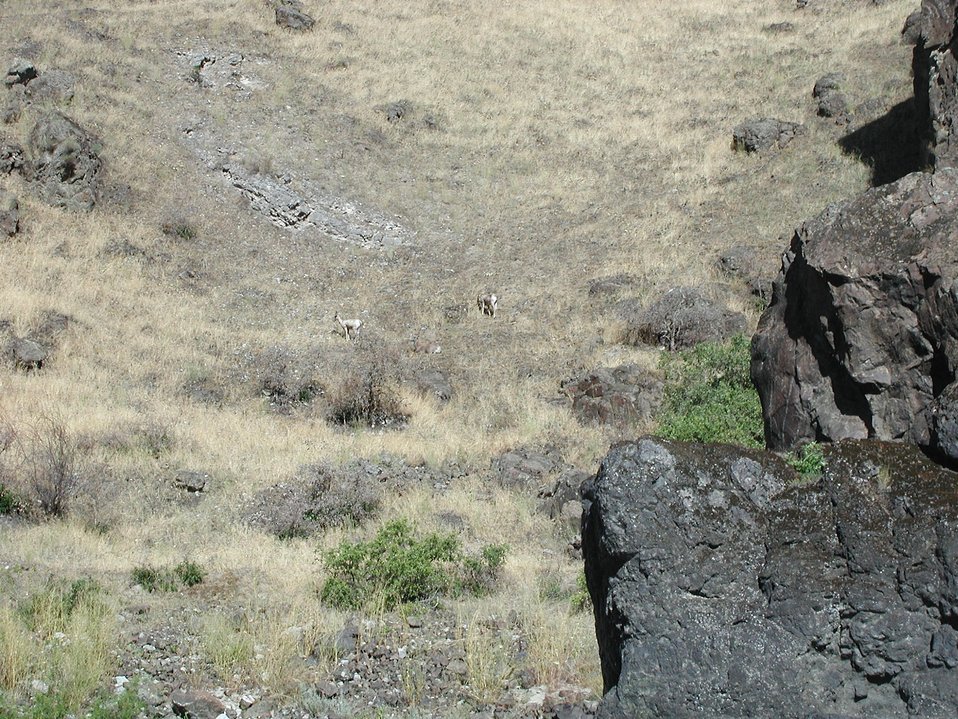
Rocky Mountain Bighorn Sheep Lower Salmon River Cottonwood Field Office UCSC Upper Columbia Salmon Clearwater District